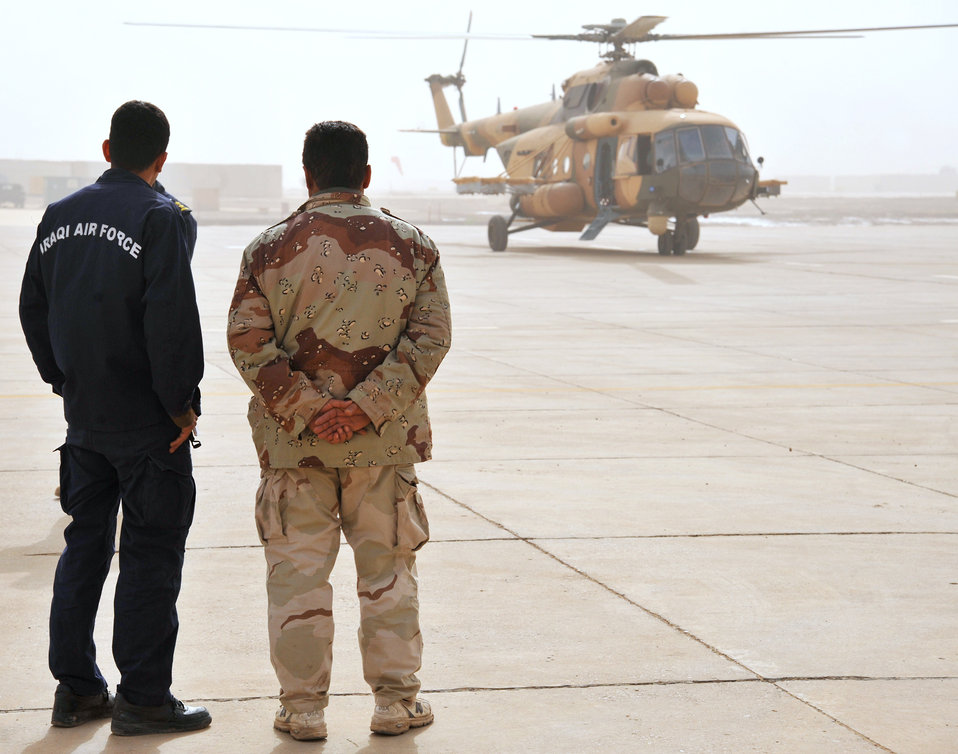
721st AEAS

Two Iraqi Army Aviation Command soldiers observe an Mi-17 helicopter as its crew prepares to take off Dec. 15, 2010, in Taji, Iraq. Air advisers with the 721st AEAS work with AAC members at Taji to advise and assist them in building a safe, self-sustaining Iraqi rotary-wing force.